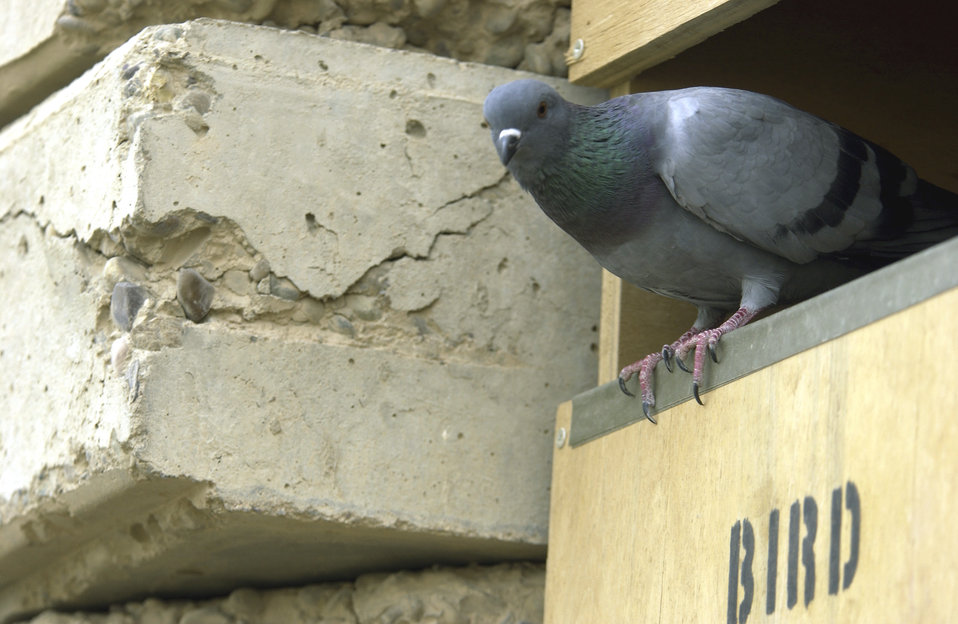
peek-a-boo

BAGHDAD INTERNATIONAL AIRPORT, Iraq -- A pigeon, named Bird, has a homemade house attached to the side of the hardened aircraft shelter 101st Expeditionary Rescue Squadron airmen also call home. Bird was rescued and nursed back to health by airmen of the 301st ERQS. Airmen of the 101st ERQS began caring for and feeding Bird when they replaced the 301st.